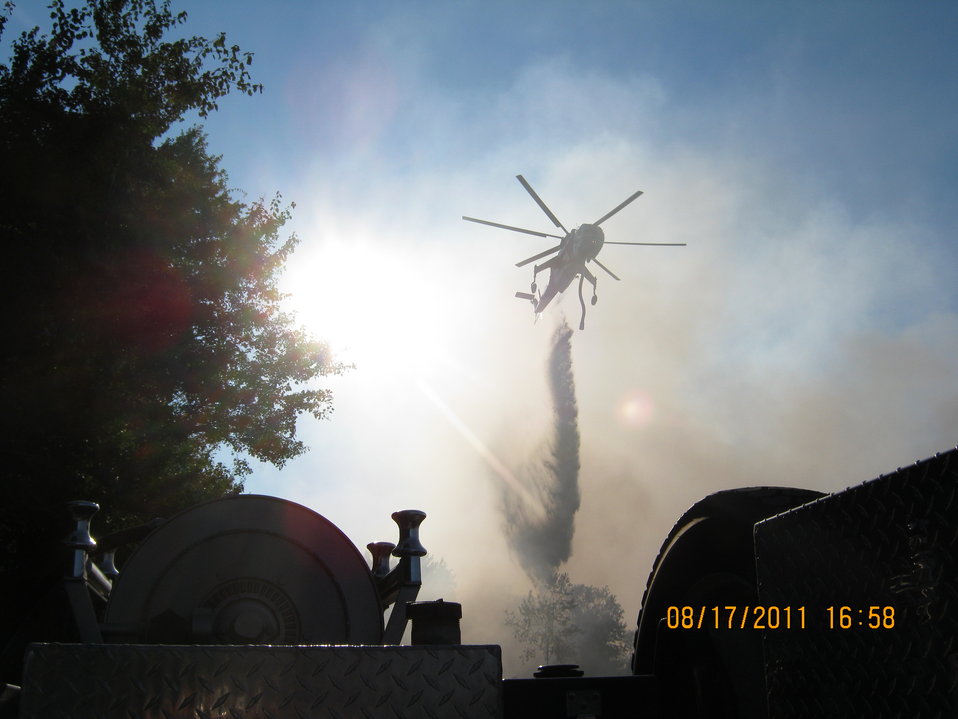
Help from above

Suffolk, VA, August 2011. A helicopter drops water on a hot spot in the Lateral West Fire at Great Dismal Swamp National Wildlife Refuge. Air operations support work firefighters do on the ground.